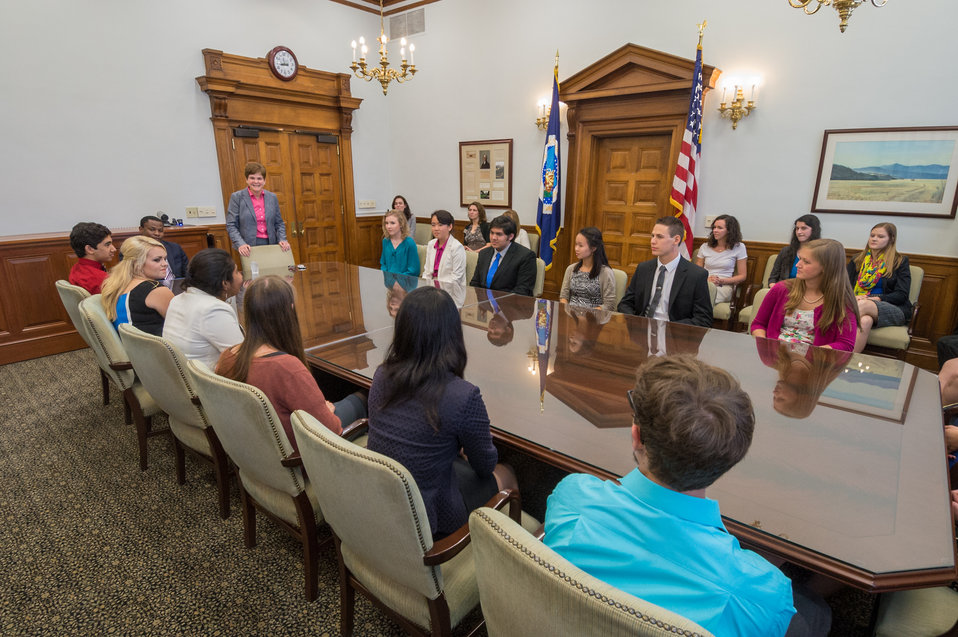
Agriculture Deputy Secretary Krysta Harden met with members of the Wallace-Carver Fellowship Leadership Symposium at the United States Department of Agriculture (USDA) in Washington, DC, Tue. Jun. 17, 2014. The theme of the 2014 Wallace Carver Fellowship is, “The Single Greatest Challenge in Human History-Sustainable Feeding Nine Billion People by 2050.” Named for Henry A. Wallace and George Washington Carver, two of the great American leaders in agricultural science and policy who made significant strides toward ending hunger in the 20th Century, the Wallace-Carver Fellowship seeks to educate, inspire and train the next generation of agricultural leaders, who will lead us in the 21st century.